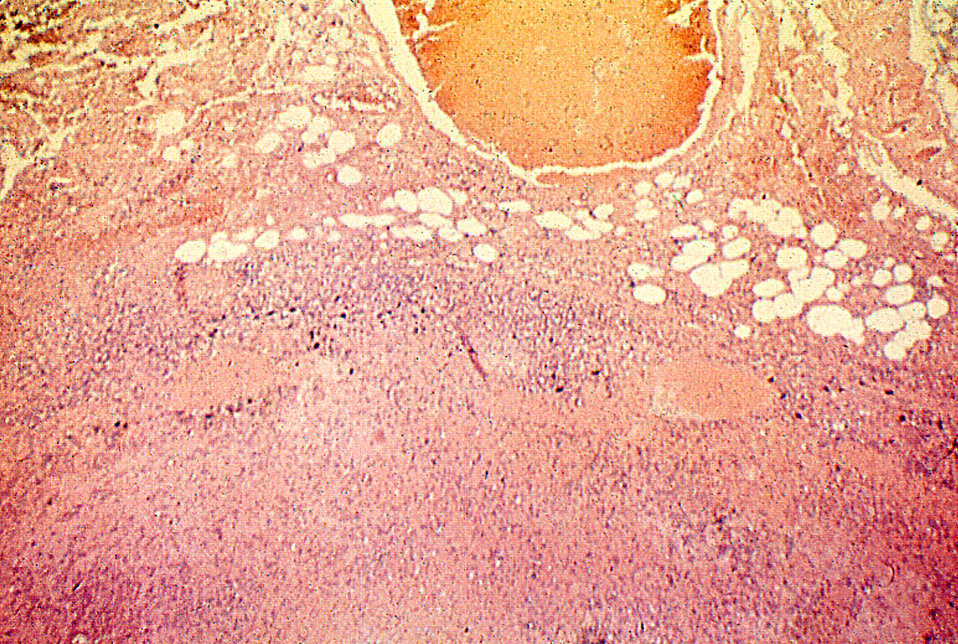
Necrosis of lymph node due to anthrax.